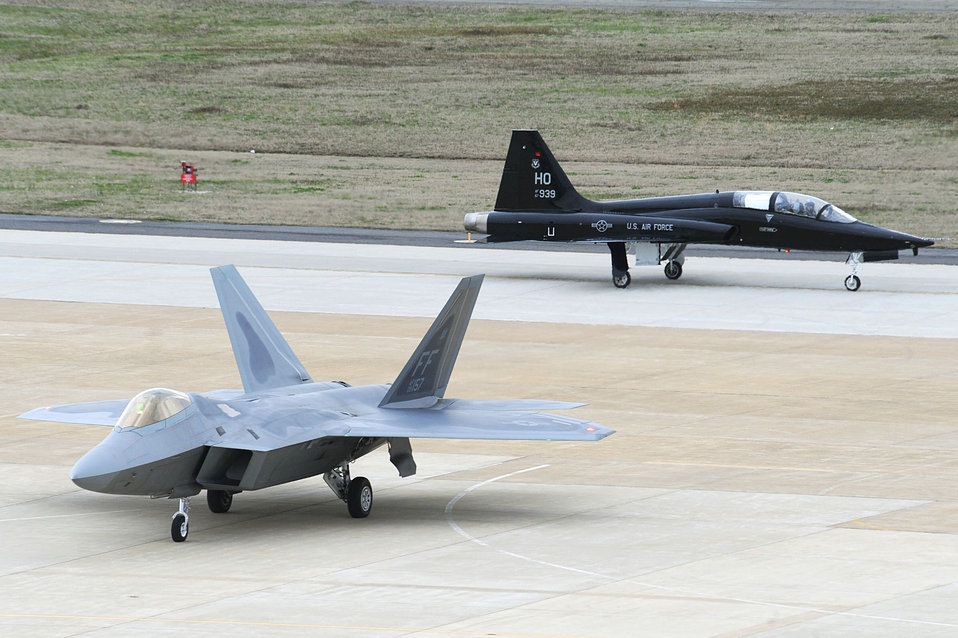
T-38

An F-22 Raptor and a T-38 Talon arrive April 1, 2011, at Langley Air Force Base, Va. The T-38 is temporarily assigned to the 1st Fighter Wing to support combat readiness training for the F-22 pilots.